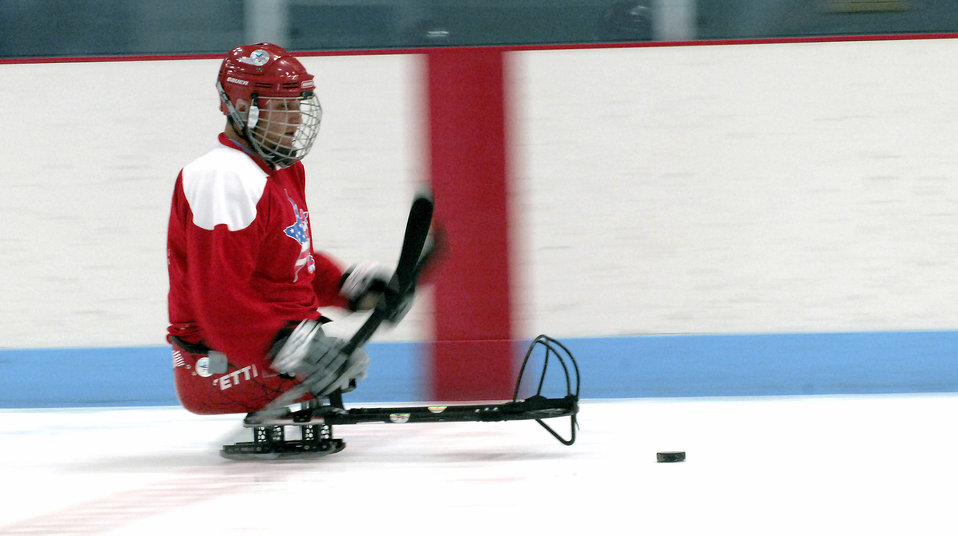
Winter sports clinic helps veterans

Disabled Army veteran, Shane Parsons handles a puck at a sled hockey game during the 22nd National Disabled Veterans Winter Sports Clinic held at the Snowmass Village, Colo., April 2. The annual disabled learn-to-ski clinic helps motivate and rehabilitate disabled Department of Defense veterans. It is the largest of its kind in the world. The clinic instructs veterans on Alpine and Nordic skiing, rock climbing, snowmobiling, sled hockey, and more.